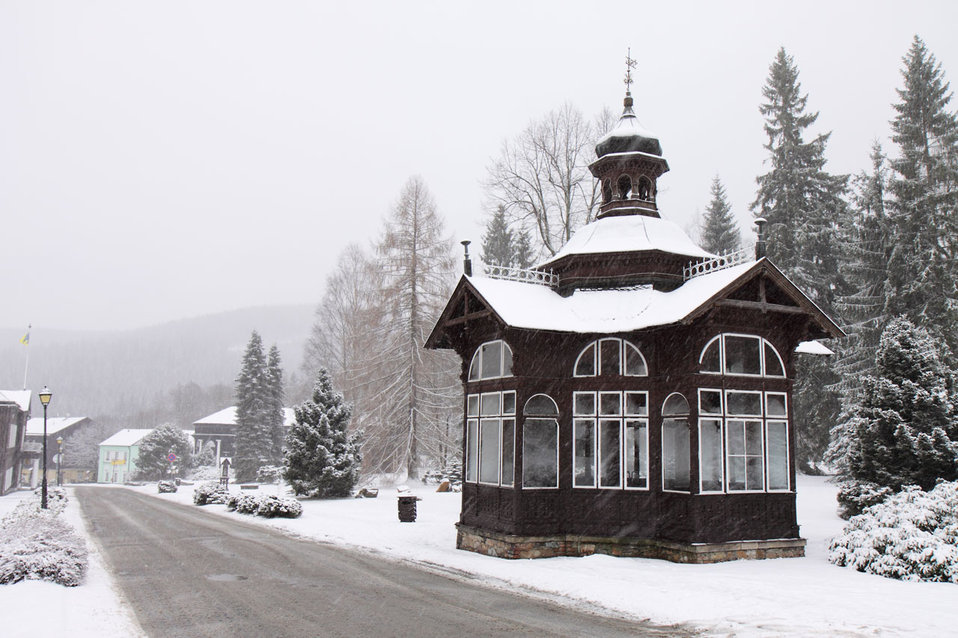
Spa cabin

Booth with spa water in karlova studanka in winter - czech republic.